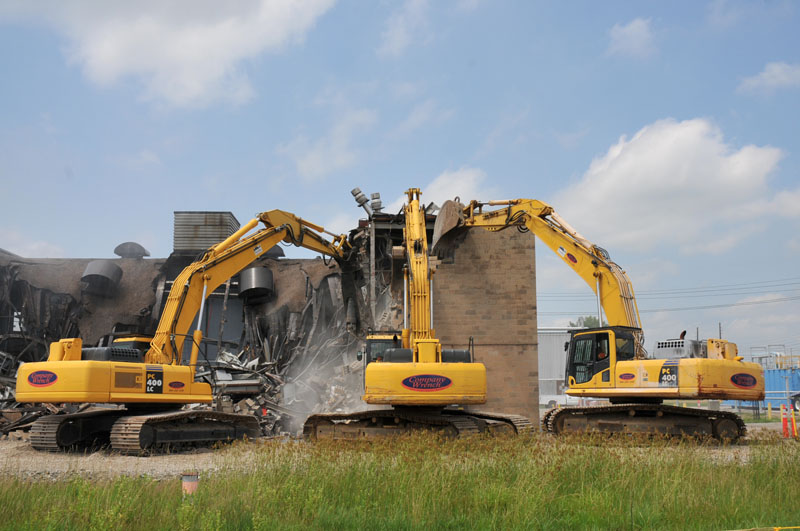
Demolition of the X-760 Chemical Engineering Building, Portsmouth.